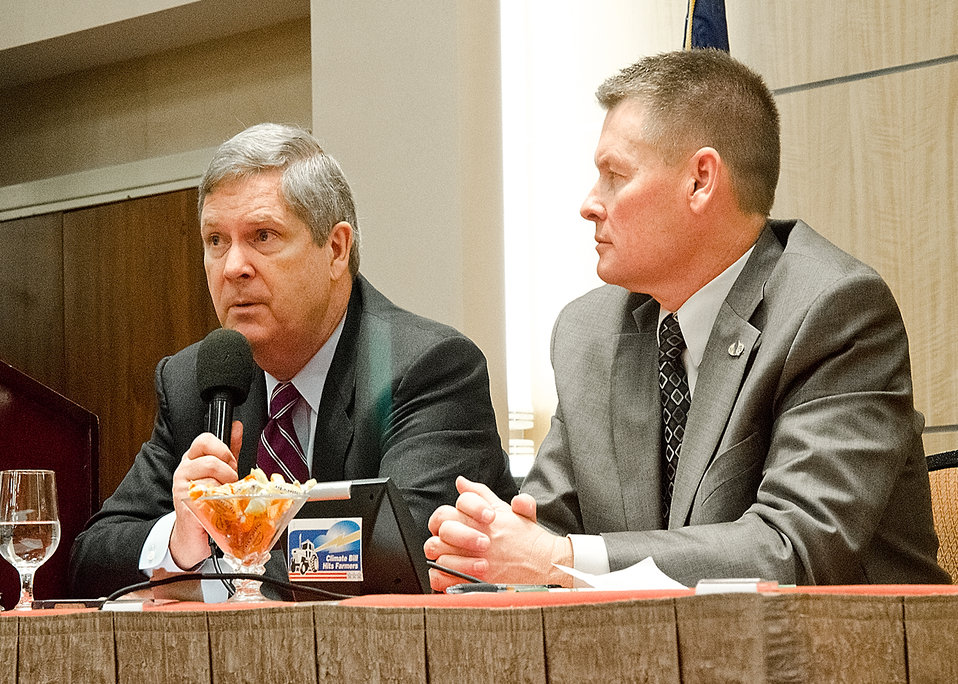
Agriculture Secretary Tom Vilsack (left) interviewed with Agritalk Host Mike Adams (right), during a meeting with the Missouri Farm Bureau in Washington, D.C., on Tuesday, March 20, 2012. Agritalk, The Voice of Rural America is a radio network based in St. Louis, Missouri reaching out to the American Mid-West.